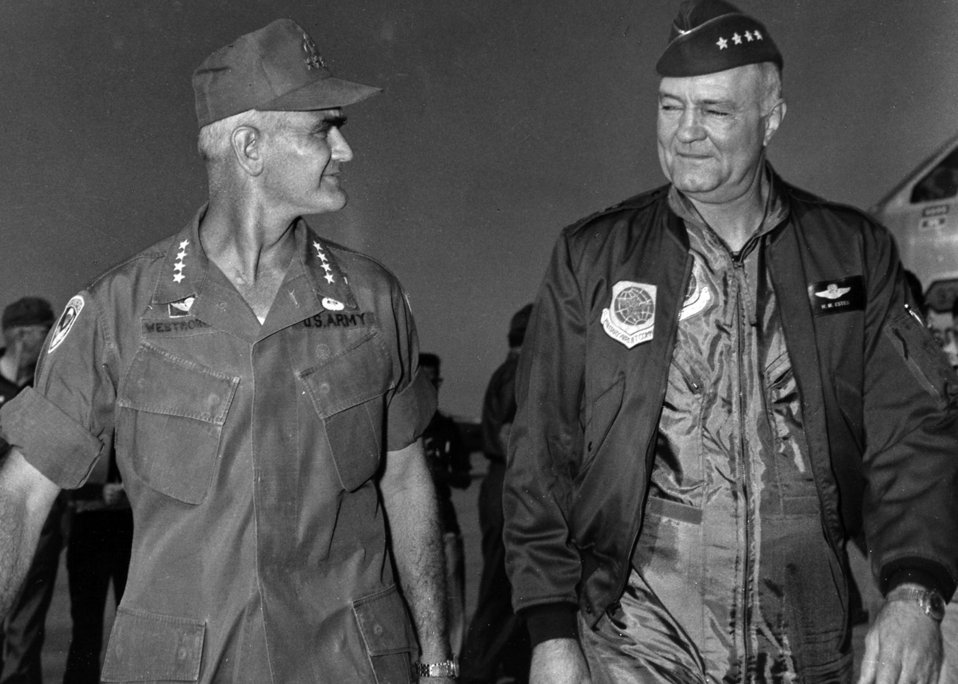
Air Force General Estes Jr. passes away

Gen. William Westmoreland, commander of U.S. Forces in Vietnam, left, discusses Operation Eagle Thrust with Gen. Howell Estes Dec. 13, 1967.